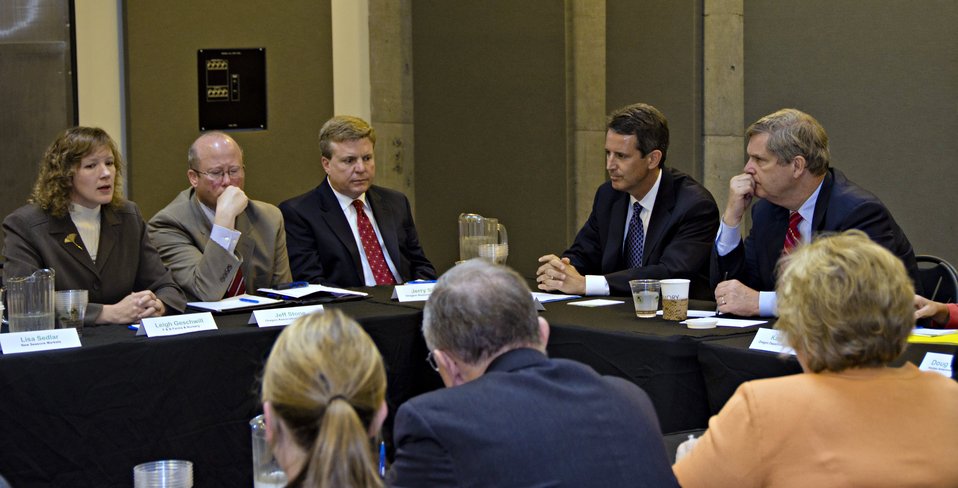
The White House Business Council Roundtable in Portland Oregon at the Gerding Theater with Agriculture Secretary Tom Vilsack and representatives from the Portland, OR Metropolitan Area on Tuesday, September 27, 2011.